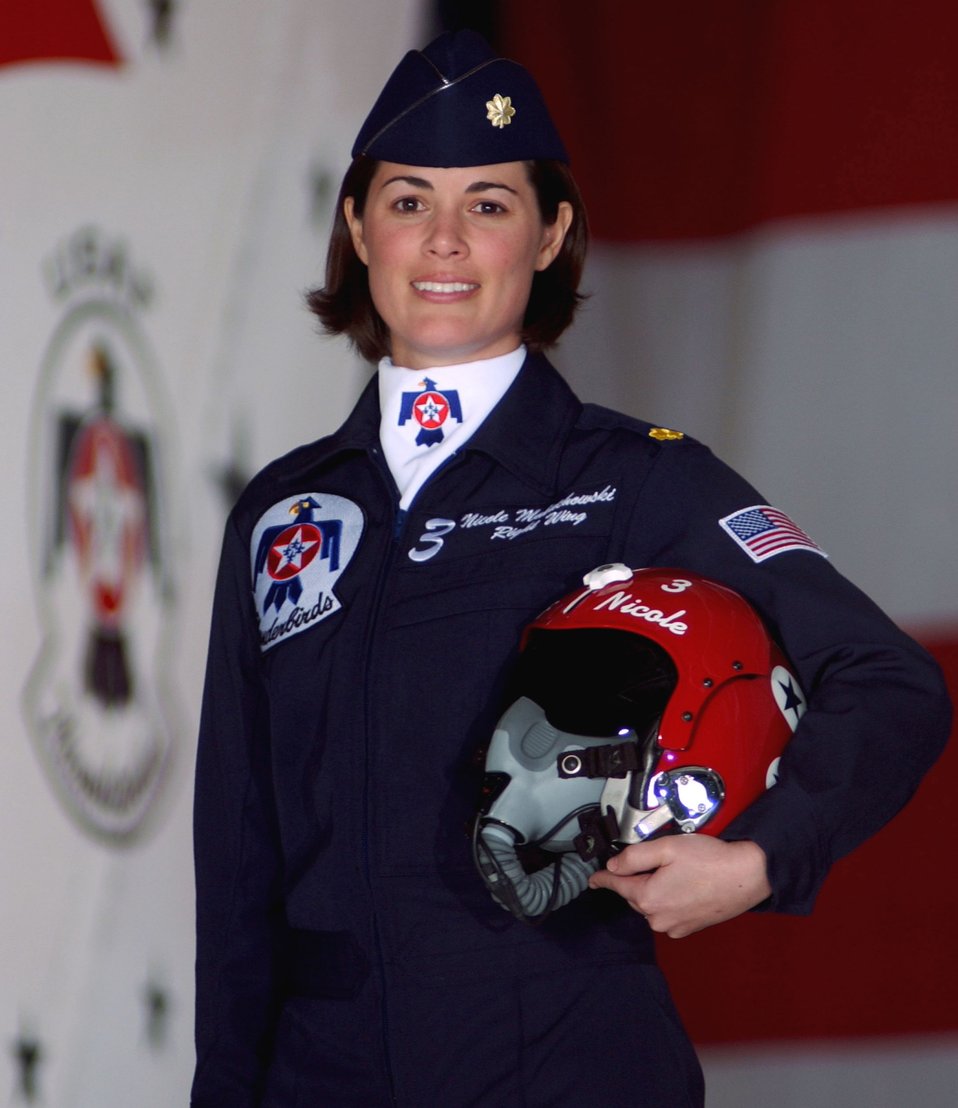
First woman Thunderbird pilot proud to serve

Maj. Nicole Malachowski is the first woman pilot on the U.S. Air Force Thunderbirds. The Thunderbirds are in Washington for the dedication of the Air Force Memorial, scheduled for Oct. 14.